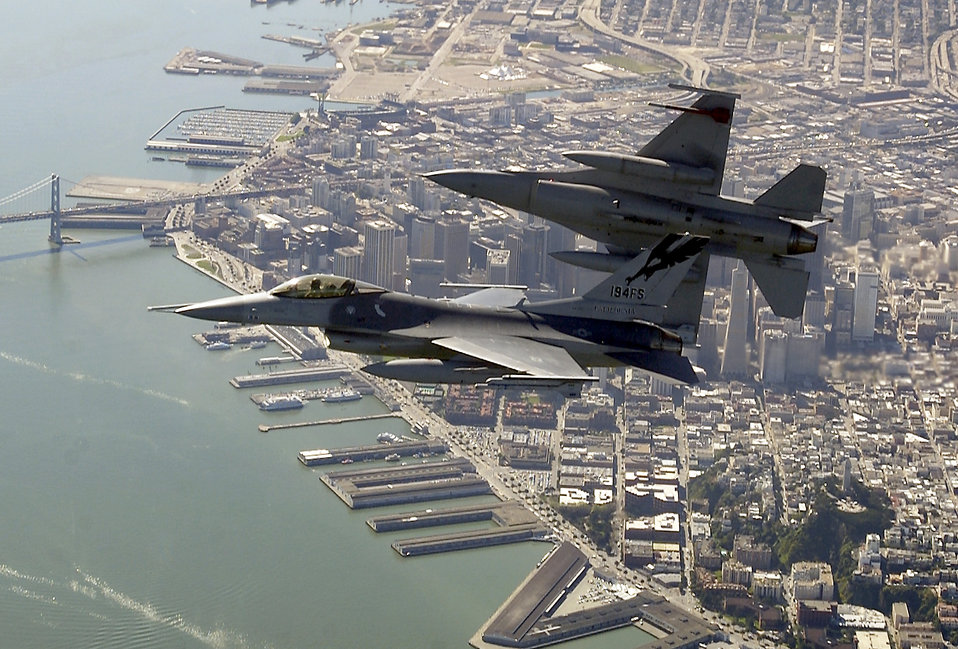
Noble Eagle

OVER THE SAN FRANCISCO BAY -- Two F-16 Fighting Falcons begin to roll into position for a rapid descent during an Operation Noble Eagle training patrol March 16. The F-16s are assigned to the California Air National Guard's 144th Fighter Wing in Fresno.